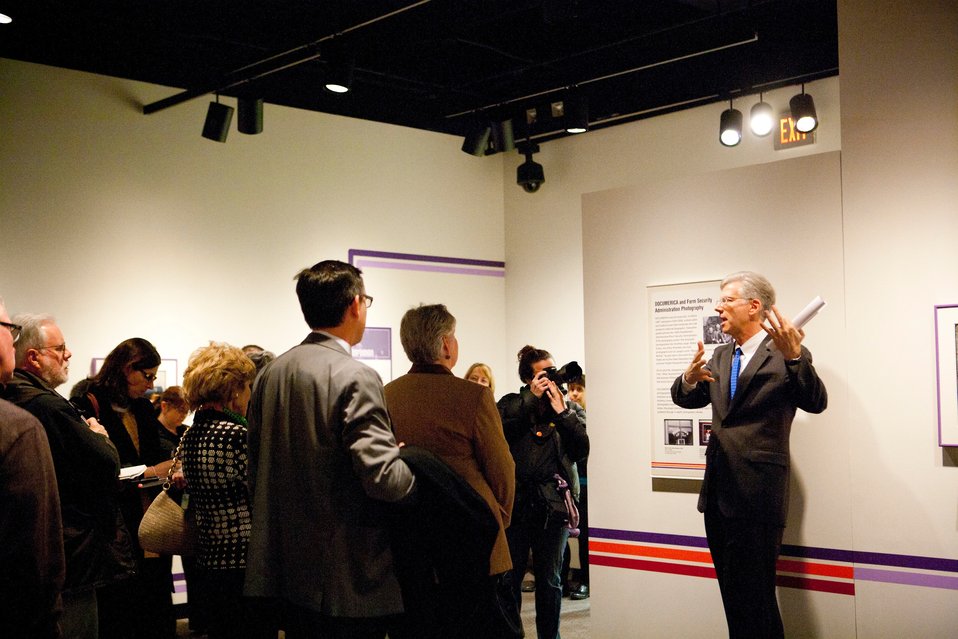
Bruce Bustard giving a tour to the press before the exhibit opens to the public; Location: Archives 1 - Lawrence F. O'Brien Gallery, Washington, D.C.